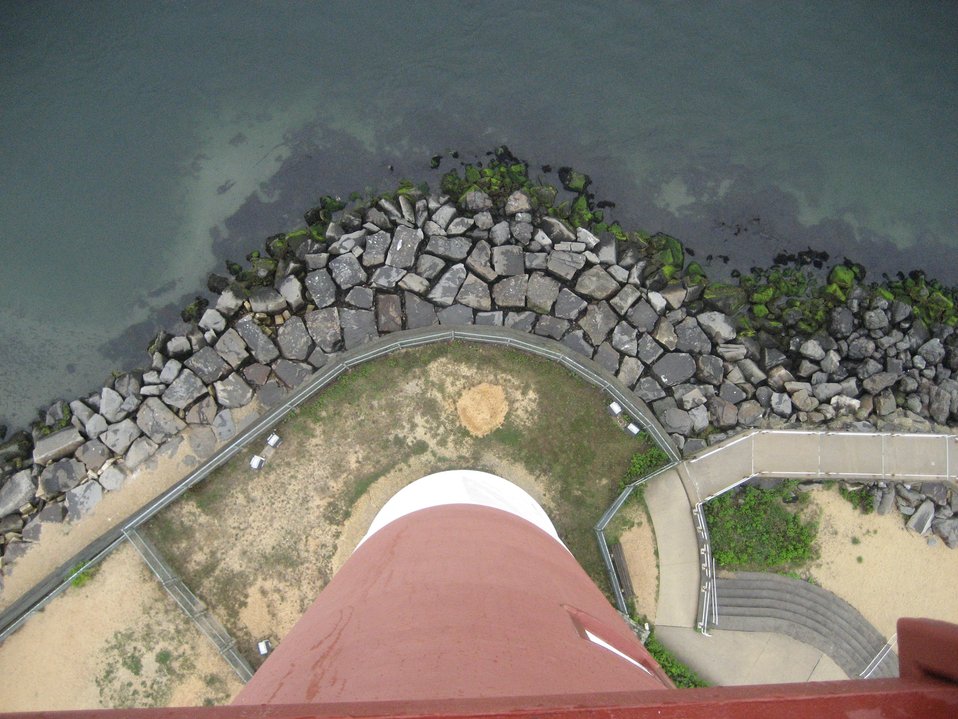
Looking down from Barnegat Lighthouse.